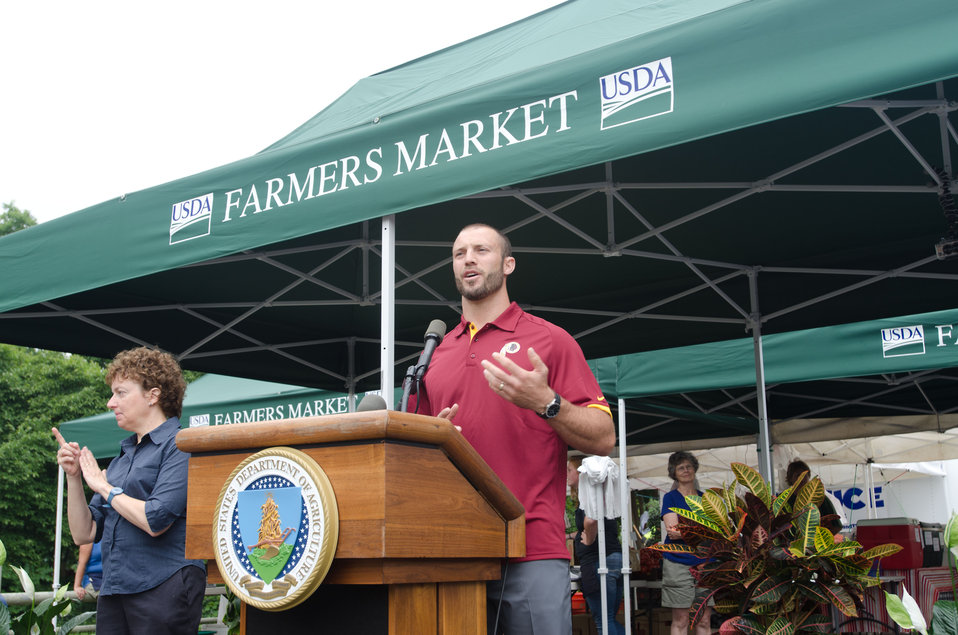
Washington Redskins, #37, Reed Doherty stresses the importance of healthy eating and 60-minutes of physical activities each day, at the opening of the 17th season of the U.S. Department of Agriculture (USDA) summer farmers market at the USDA Whitten Building east parking lot in Washington, D.C., on Friday, May 31, 2012. This year's theme is Grow, Healthy, Eat Healthy and Be Healthy. USDA and Fuel Up to Play 60, in partnership with the National Dairy Council and the National Football League, invited employees, visitors and local school children to participate in opening day activities. New features for 2012 include an on-site sign language interpreter, a hand washing station, and a USDA-certified organic vendor. Other products sold today are fresh fruits, vegetables, herbs, baked goods, meats, kettle popcorn, local honey, hand-made soap and more.